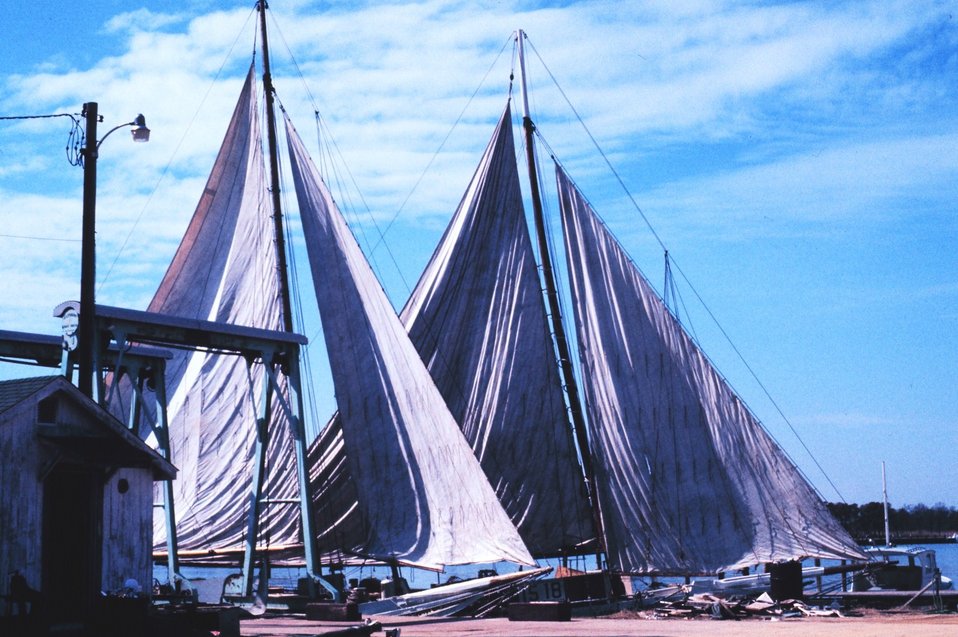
Sailing oyster dredgers drying their sails alongside the dock.